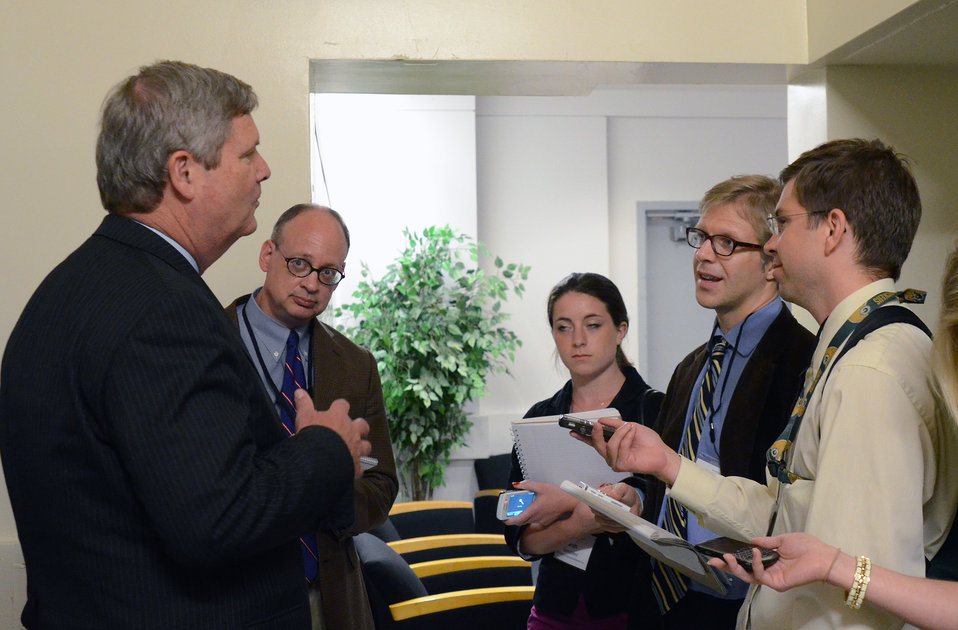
Agriculture Secretary Tom Vilsack responds to questions from the press at the Association of Land-Grant Universities (APLU) 150th Year Anniversary of the Morrill Act: Advancing the Legacy at the Ronald Reagan Building and International Trade Center in Washington D.C. on Tuesday, June 26, 2012.